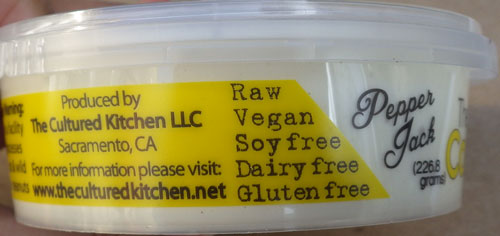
RECALLED – Non-dairy cashew cheese products

ecember 31, 2013 – The Cultured Kitchen® Voluntarily Recalls Cashew Cheese Due To Possible Risk Of Contamination From Salmonella
Photos.